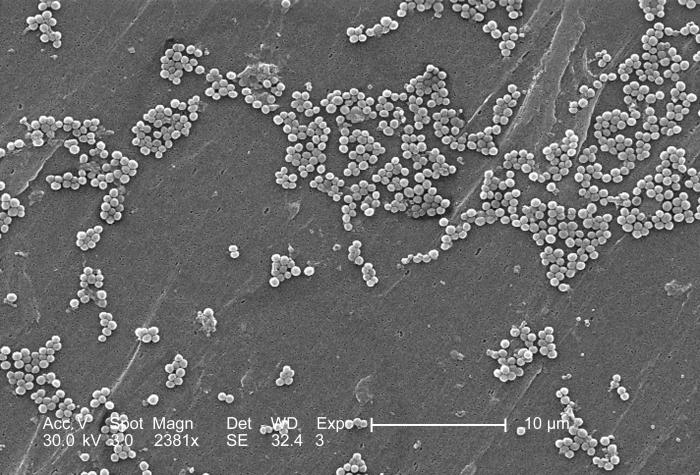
This 2005 scanning electron micrograph (SEM) depicted numerous clumps of methicillin-resistant Staphylococcus aureus bacteria, commonly referred to by the acronym, MRSA; Magnified 2381x. Recently recognized outbreaks, or clusters of MRSA in community settings have been associated with strains that have some unique microbiologic and genetic properties, compared with the traditional hospital-based MRSA strains, which suggests some biologic properties, e.g., virulence factors like toxins, may allow the community strains to spread more easily, or cause more skin disease. A common strain named USA300-0114 has caused many such outbreaks in the United States. See PHIL 10048 for a colorized version of this micrograph.